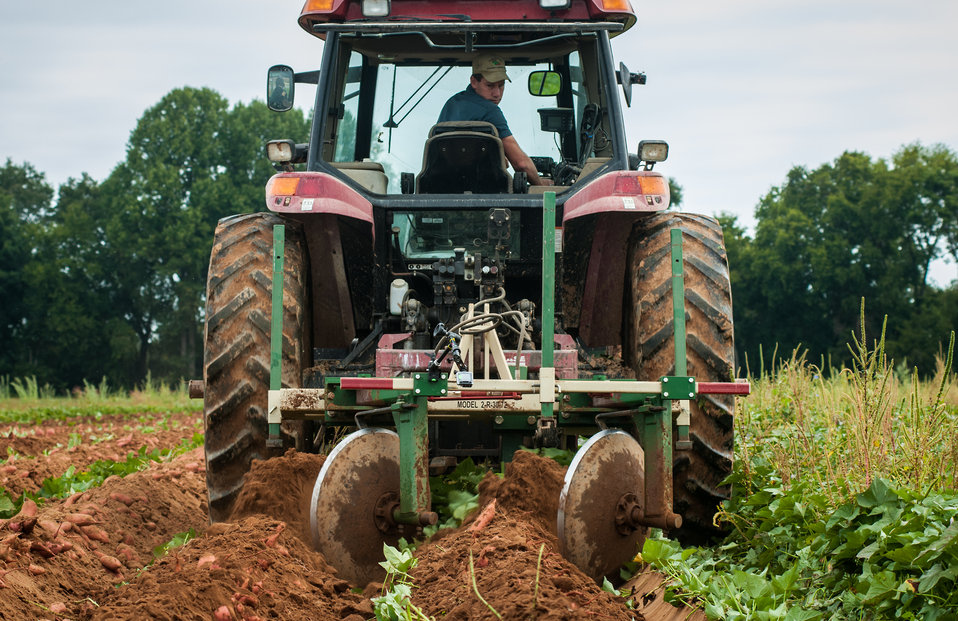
Kevin Kirby operates a tractor to begin the sweet potato harvest process by plowing them up from the field on Kirby Farms in Mechanicsville, VA on Sep. 20, 2013. Kirby Farms a third-generation family farm that covers 500 acres, and generates produce and grains on a year-around operation.